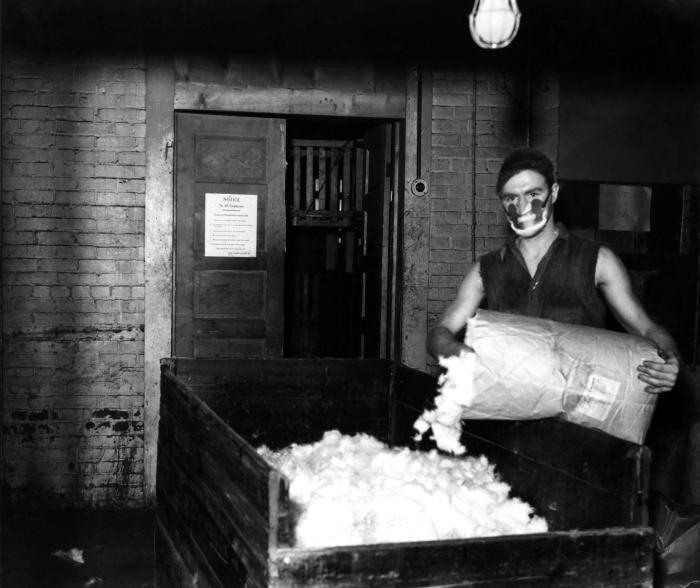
This historical image was provided by the Center for Disease Control's (CDC), National Institute for Occupational Safety and Health (NIOSH). The photograph depicted a hatters' industry factory worker who was emptying a bag of processed animal fur into a bin. Though it cannot be determined from this image, as to what may have been the next step in the hat manufacturing process, the man was wearing a filtered breathing mask. However, he was not wearing protective goggles, or gloves. Working with 'carroted' fur, fixed with mercury nitrate, workers could be exposed to airborne mercury, especially when using steam, thereby, suffering the detrimental neurologic consequences from its inhalation. The image was published in the 'Public Health Bulletin', No. 263, 1941, in an article entitled, 'Mercurialism and its Control in the Felt-Hat Industry".